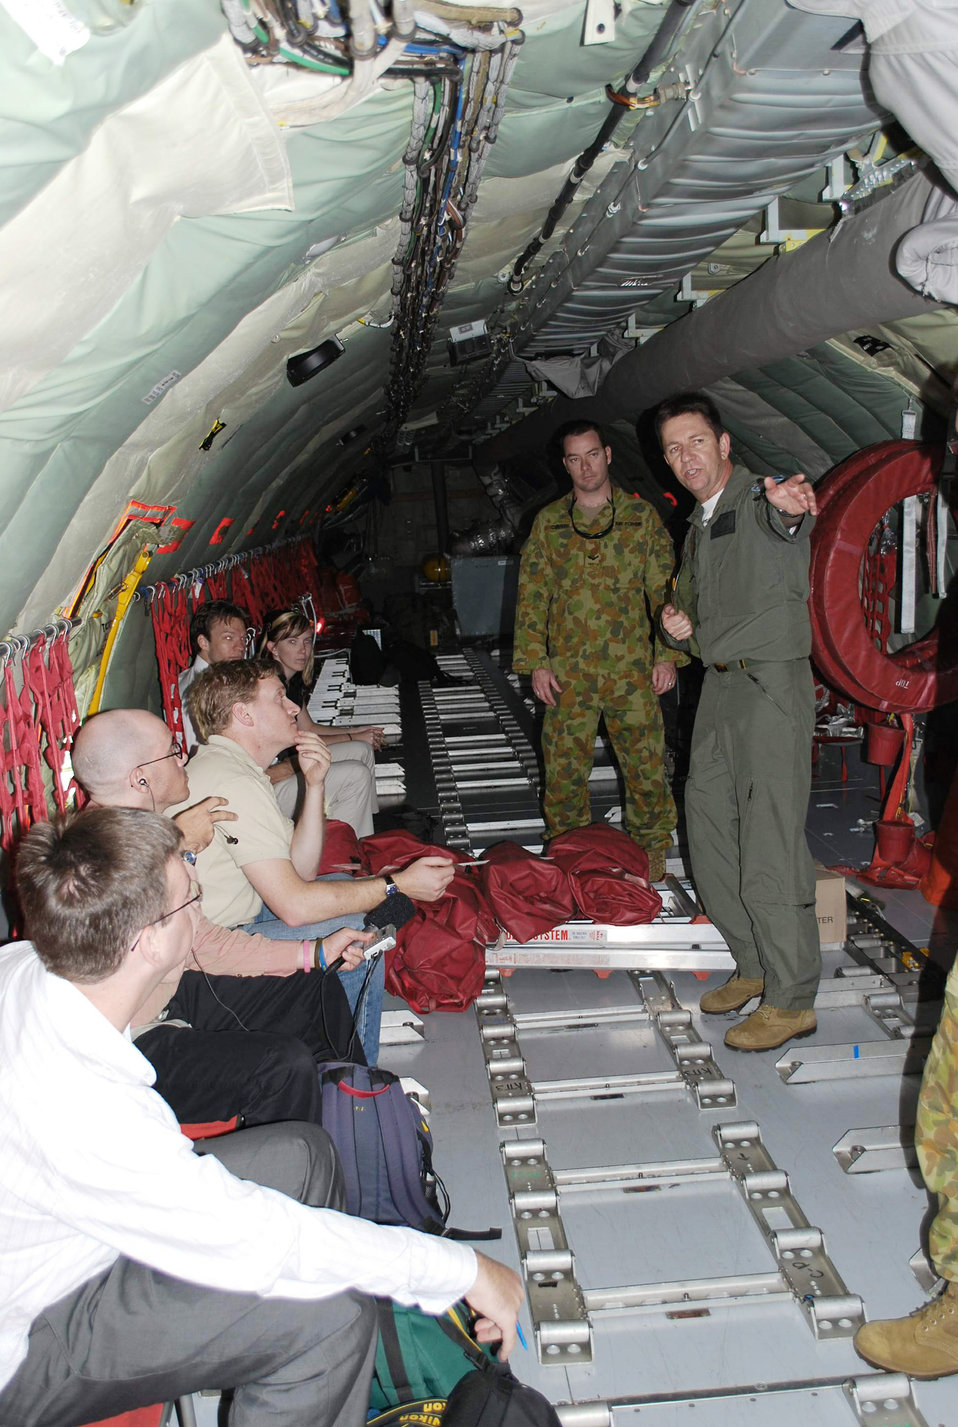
Airmen keep exercise participants flying high down under

Royal Australian Air Force Warrant Officer Darrell Bent briefs emergency egress procedures to passengers aboard a KC-135 Stratotanker July 19 over Australia. The KC-135 is from the 909th Air Refueling Squadron from Kadena Air Base, Japan, and is in Australia participating in Exercise Talisman Saber 2009. Warrant Officer Bent is an air refueling operator.